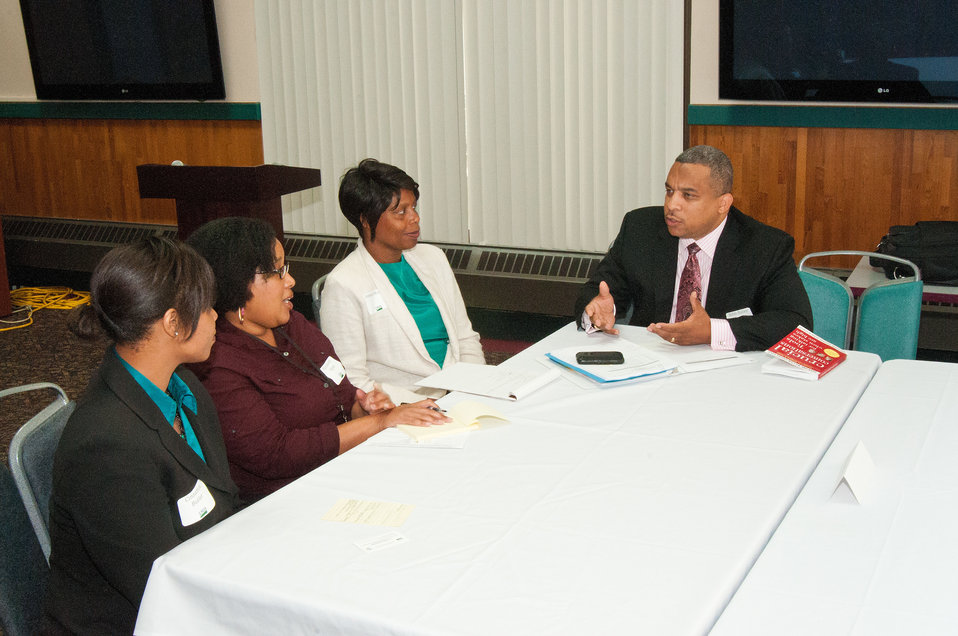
U.S. Department of Agriculture (USDA) Departmental Management (DM) and mentor Robin Bailey discusses “Crucial Conversations”, decisive and important communication with employers, employees and clients at USDA’s Office of Human Resources Management (OHRM) Virtual University’s Fall Flash Mentoring Event at USDA in Washington, D.C. on Thursday, Sept. 6, 2012 in Washington, DC.